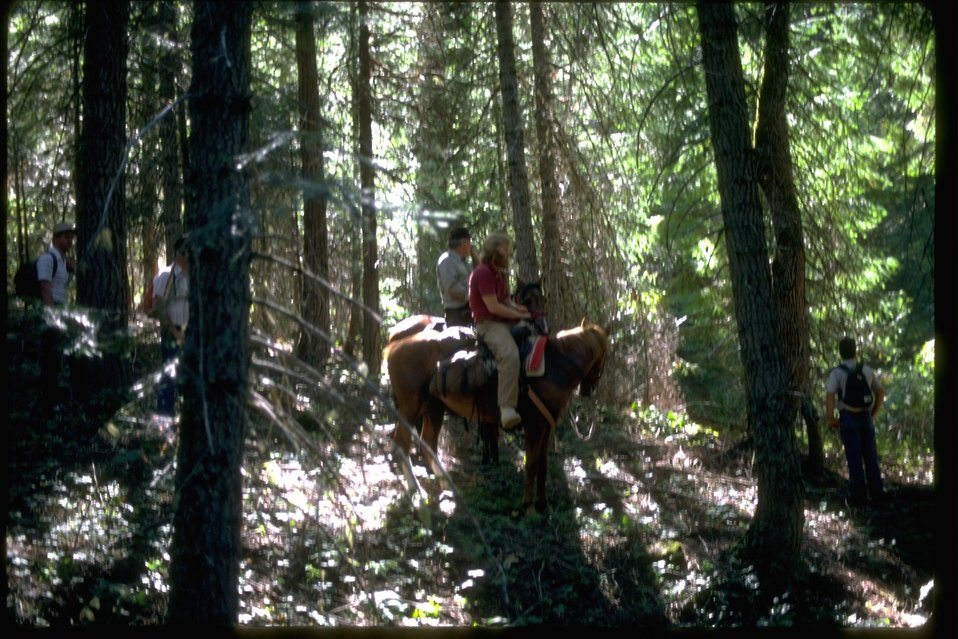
Wilderness Inventory Team: 2 on horseback and others on foot.